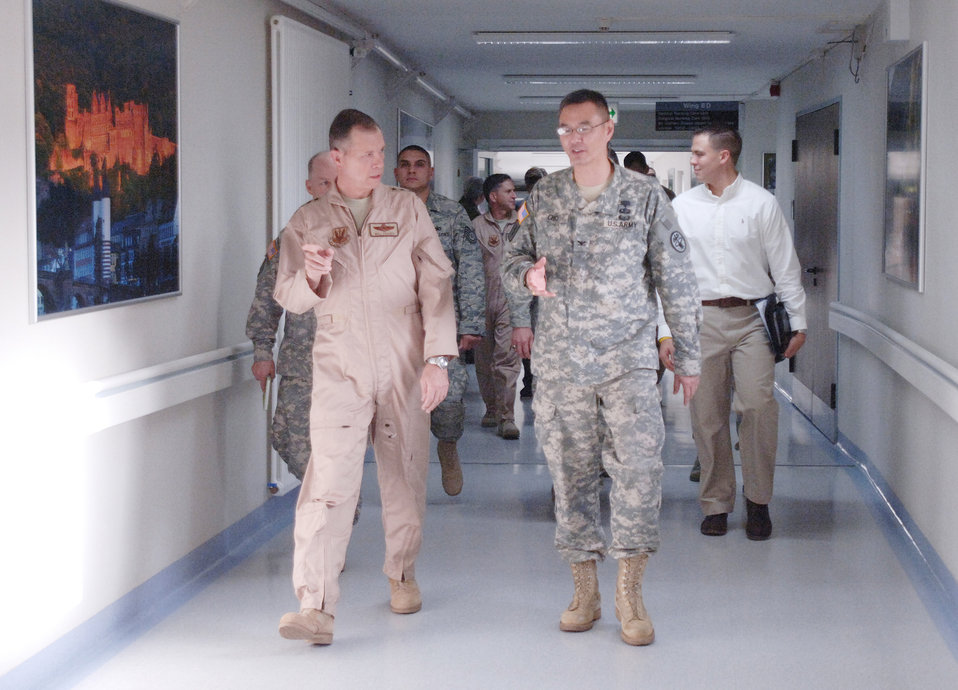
Air Combat Command leaders visit wounded warriors in Landstuhl Regional Medical Center

Gen. William M. Fraser III, (left) visits Landstuhl Regional Medical Center, Germany, Nov. 20, 2009, where he met U.S. Army Col. John Cho, (right), who led a tour visiting hospital staff and wounded U.S. and coalition servicemembers. Since 2004, the hospital has treated more than 58,000 wounded U.S. and coalition servicemembers and civilians injured in Iraq and Afghanistan. General Fraser is the commander of Air Combat Command and Colonel Cho is the hospital commander.